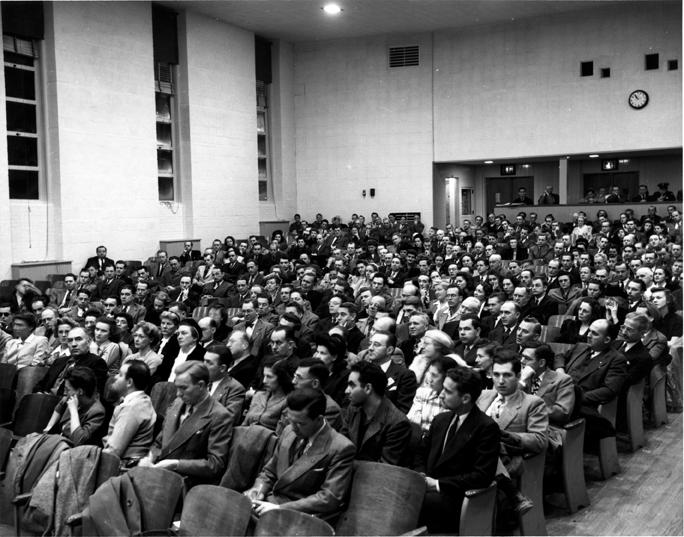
Meeting at Oak Ridge